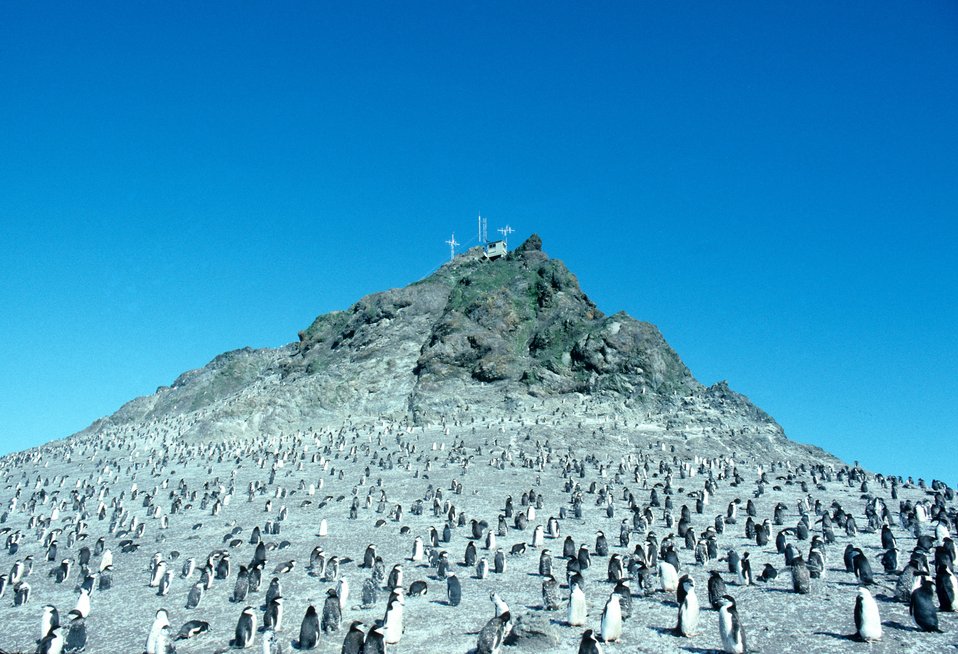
A penguin colony near a weather station, Seal Island.